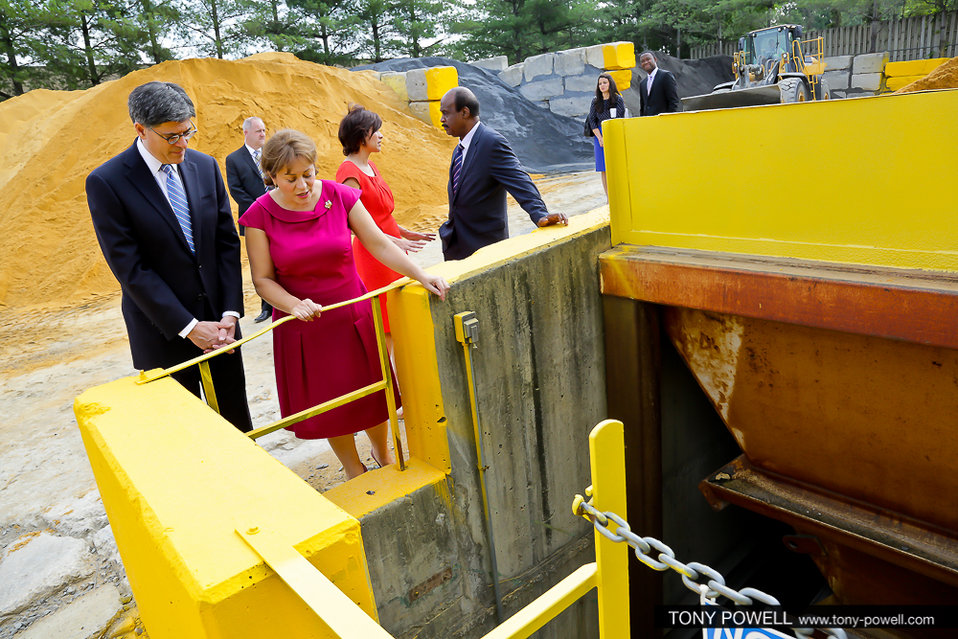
Secretary Lew tours family-owned business during Small Business Week

June 17, 2013 - During National Small Business Week, Secretary Lew toured the M. Luis Construction’s asphalt manufacturing facility in Maryland.